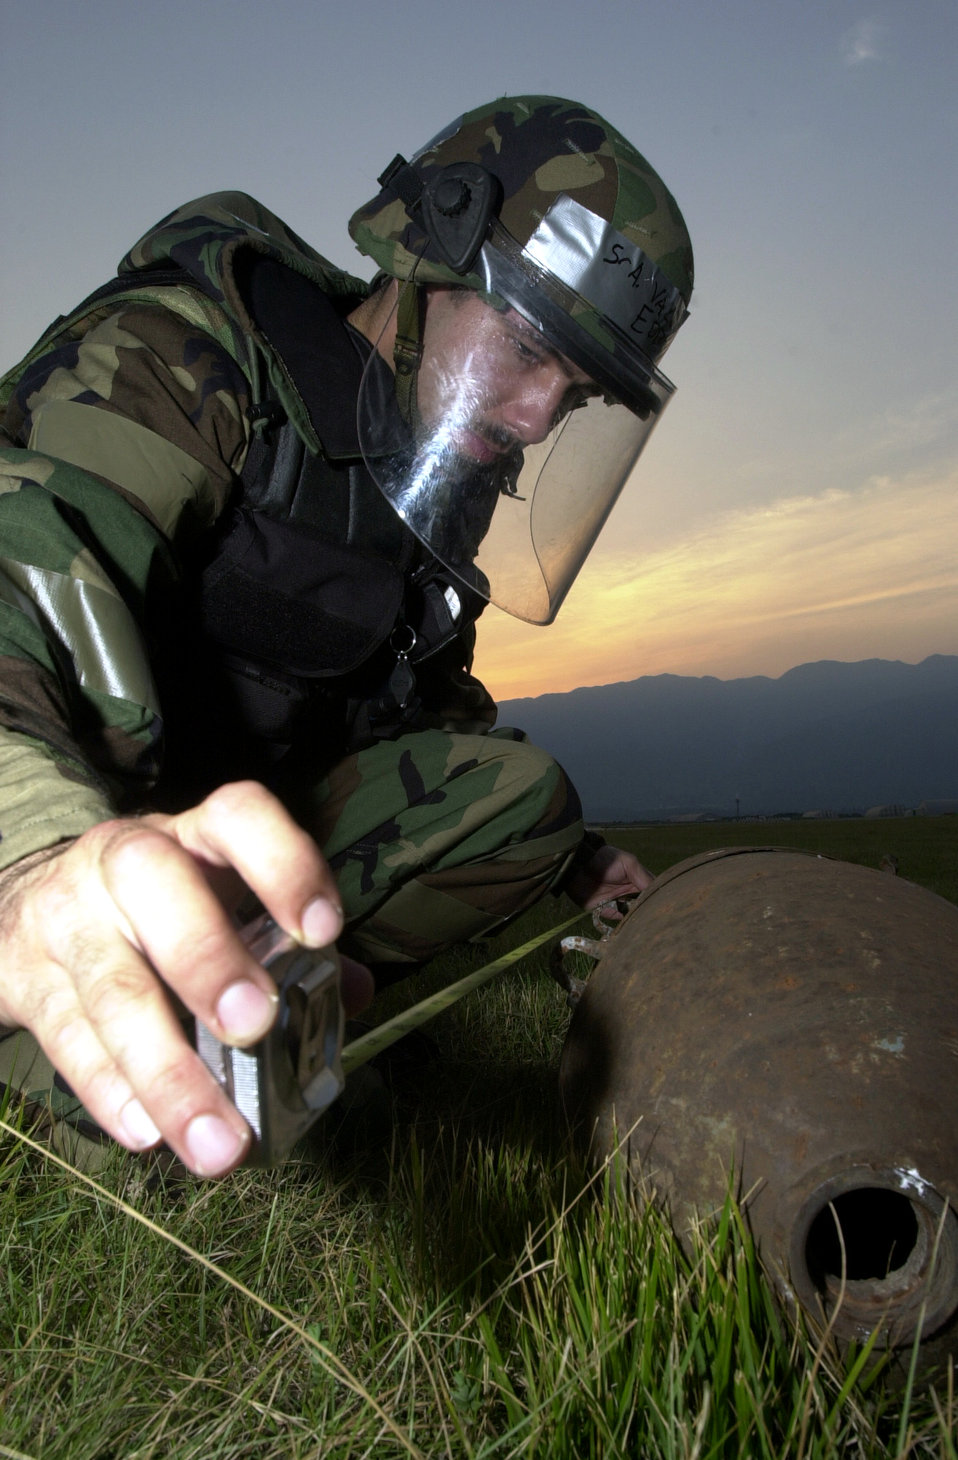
Local Salty Nation

AVIANO AIR BASE, Italy -- Senior Airman Jose Vazquez with the Explosive Ordnance Disposal unit in the 31st Civil Engineer Squadron measures unexploded ordnance during the Local Salty Nation exercise here July 22, 2003. The Local Salty Nation exercise is in preparation for a NATO Tactical Evaluation scheduled for spring 2004. In addition to performing everyday operations in a chemical environment, personnel must perform self-aid and buddy care, post attack and unexploded ordnance reconnaissance and setting up a contamination control areas.